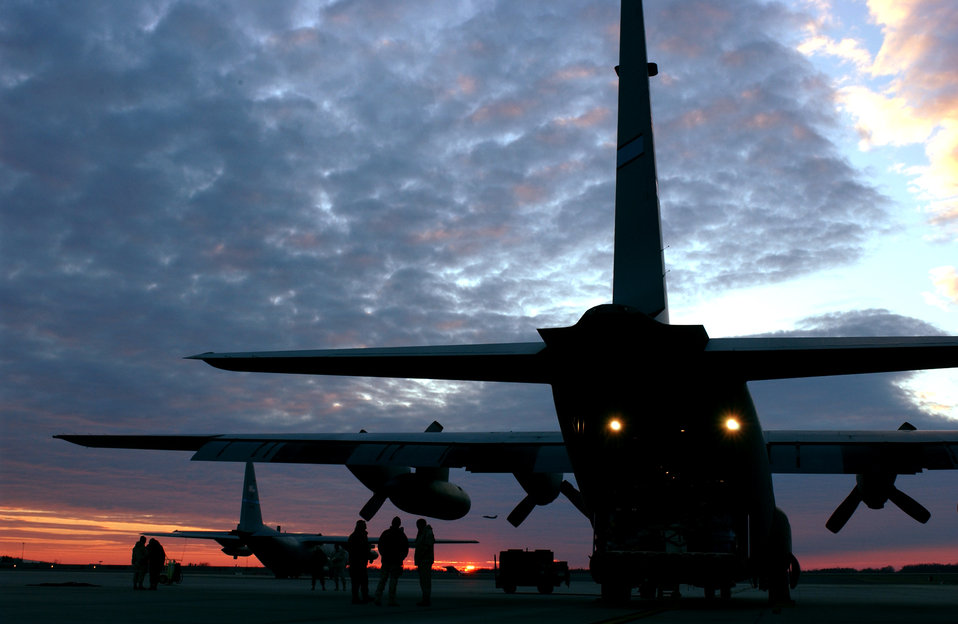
Defending freedom

Flight crew members begin to preflight and board a C-130 Hercules bound for a mission to Southwest Asia Feb. 6 at Charlotte, N.C. The Airmen are assigned to the 145th Airlift Wing, North Carolina Air National Guard. The aircraft is capable of operating from rough, dirt strips and is the prime transport for air dropping troops and equipment into hostile areas.